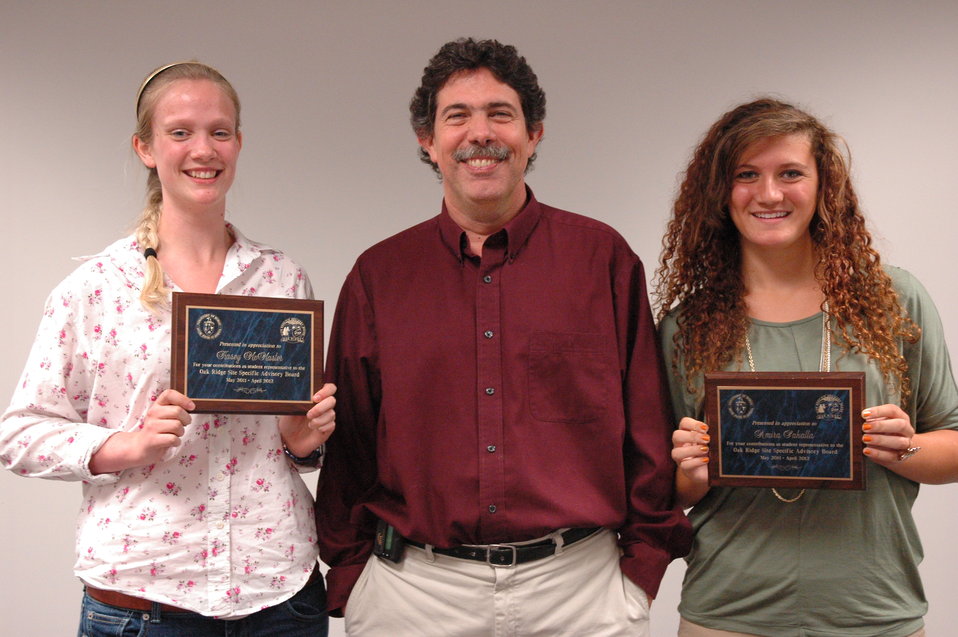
Oak Ridge Students Reflect on Advisory Board Experience

At Oak Ridge, two non-voting student representatives from area high schools sit on the Oak Ridge Site-Specific Advisory Board (ORSSAB) and participate in the board’s working committees. The ORSSAB’s outgoing student representatives, Kasey McMaster and Amira Sakalla, were recently recognized for their service at the board’s April meeting.
“I’ve really enjoyed my time on ORSSAB. It gave me a taste of how decisions and planning are carried out in the real world,” said Sakalla, a senior at Hardin Valley Academy.